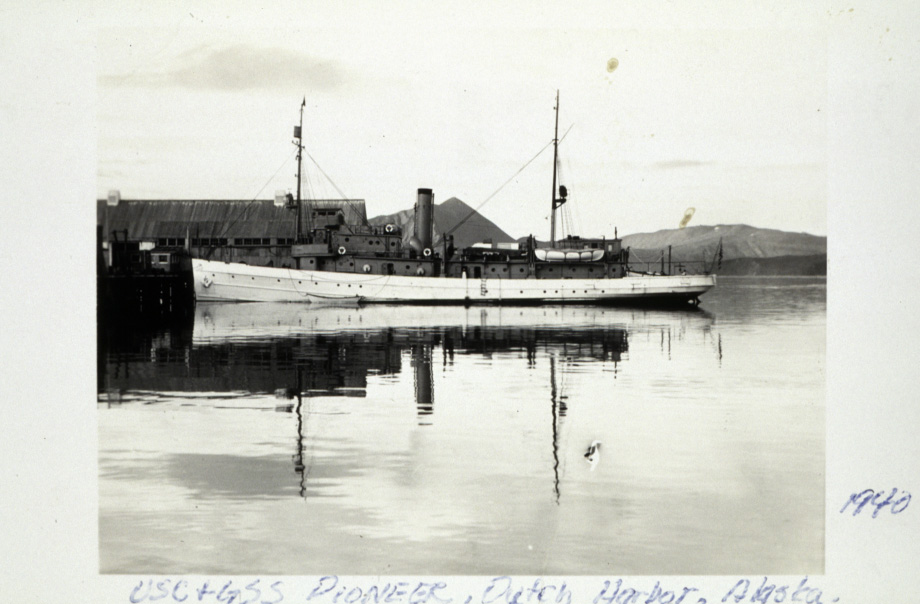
Coast and Geodetic Survey Ship PIONEER. In service 1922 - 1941.